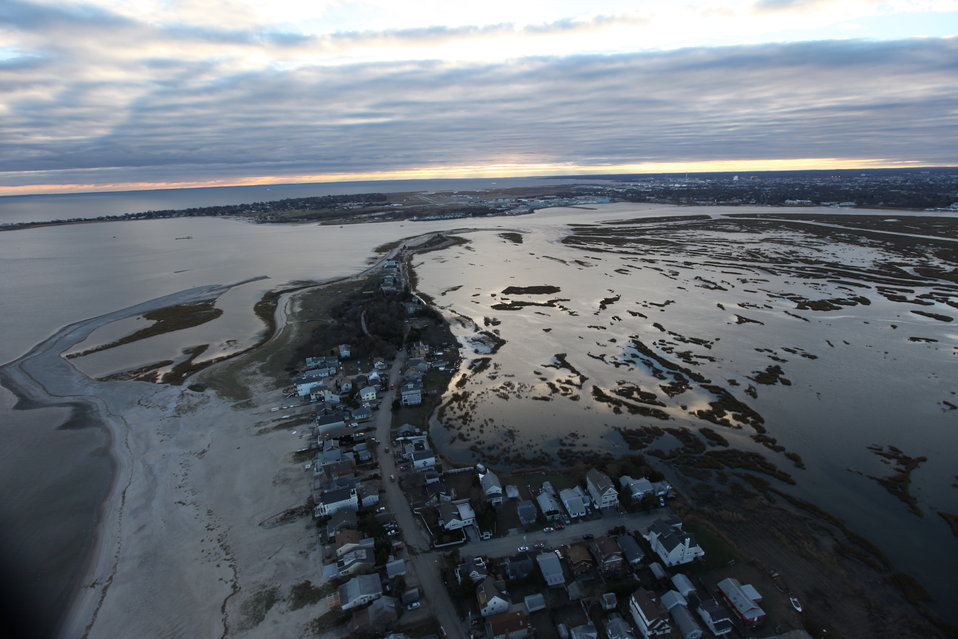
Stewart B. McKinney National Wildlife Refuge-Milford Point (CT)

Aerial view of Milford Point in the aftermath of storm Sandy.